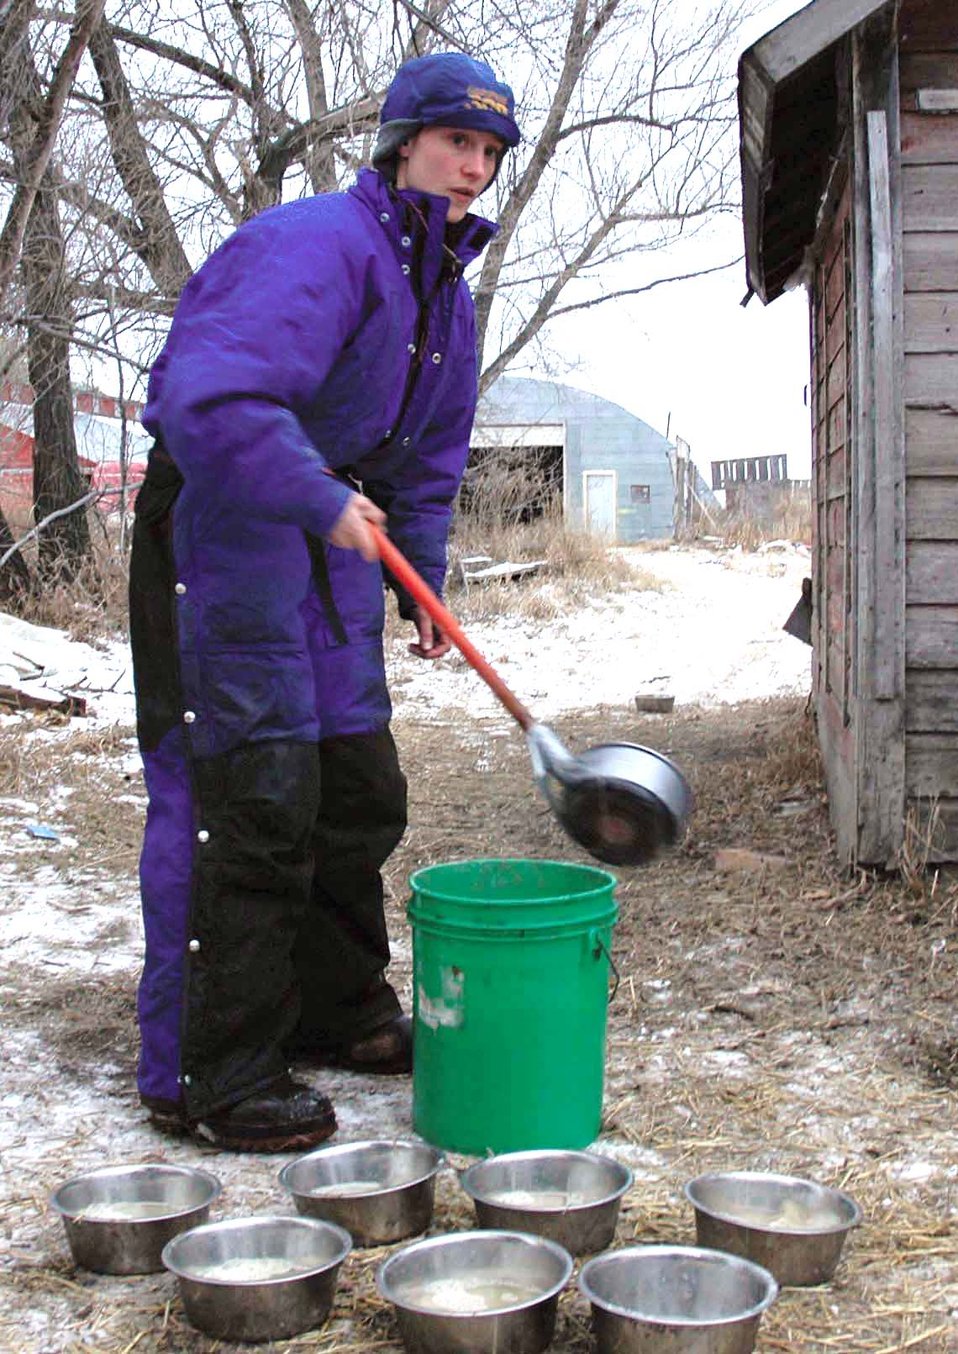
Airman's hobby goes to the dogs

DEERING, N.D. -- Senior Airman Mary Lunde fills up bowls of water for her dogs before taking them for a ride across the snow-covered North Dakota prairie near here. She owns more than a dozen sled dogs that she trains with weekly in hopes of one day racing in the Iditarod. Airman Lunde is assigned to the 5th Munitions Squadron at nearby Minot Air Force Base.